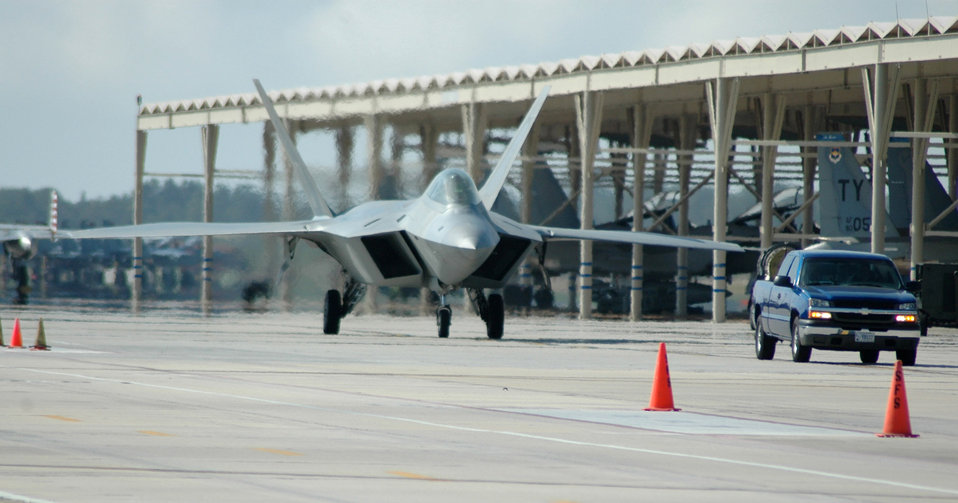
Tyndall receives F-22A maintenance trainer

An F-22A Raptor, the new ground instructional trainer aircraft at the 43rd Fighter Squadron, arrives at Tyndall Air Force Base, Fla., on Wednesday, April 19, 2006.